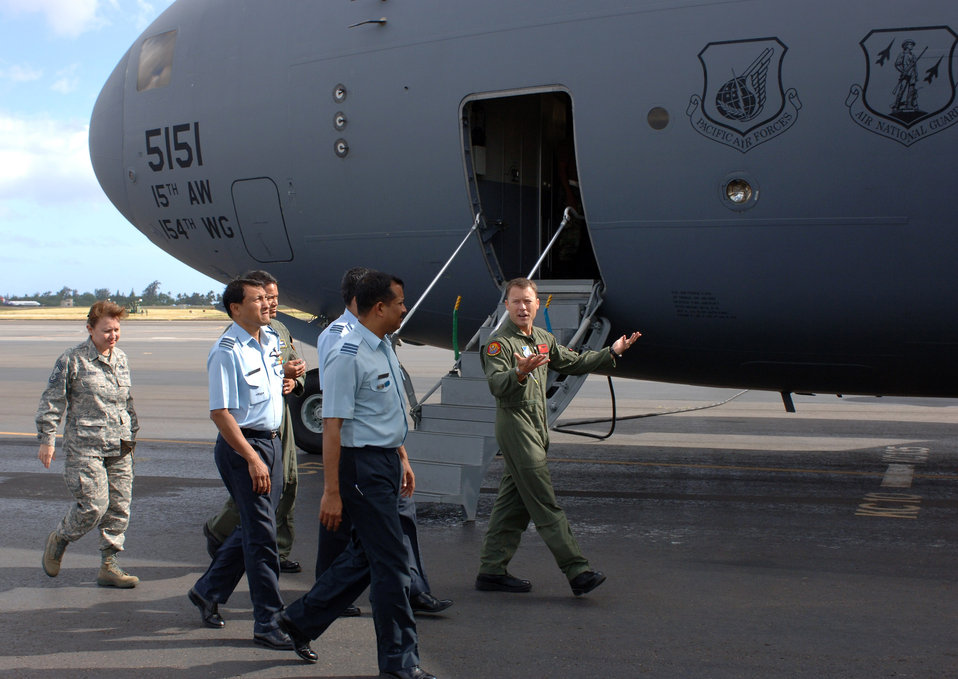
U.S., India strengthen partnership

Lt. Col. Casey Eaton explains the capabilities of the C-17 Globemaster III to Indian air force wing commanders Anup Kumar Dutta, KV Surendran Nair and SK Vidhate during their Feb. 25 visit to Hickam Air Force Base, Hawaii. Members of the 613th Air and Space Operations Center at Hickam AFB hosted the visit Feb. 23 through 27, during which the Indian air force officers learned how the United States commands and controls airpower in the Pacific through the 613th AOC. Five 613th AOC members will visit India March 9 through 13 for a similar orientation, as part of a subject-matter expert exchange with the Indian air force. Colonel Eaton is the 535th Airlift Squadron commander.